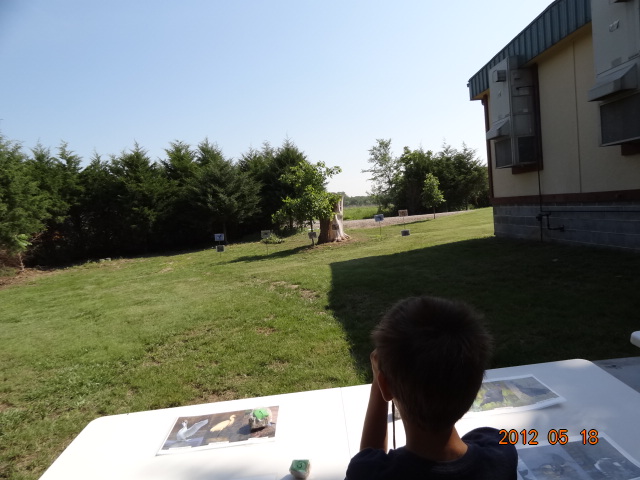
International Migratory Bird Day 2012

Marais des Cygnes National Wildlife Refuge